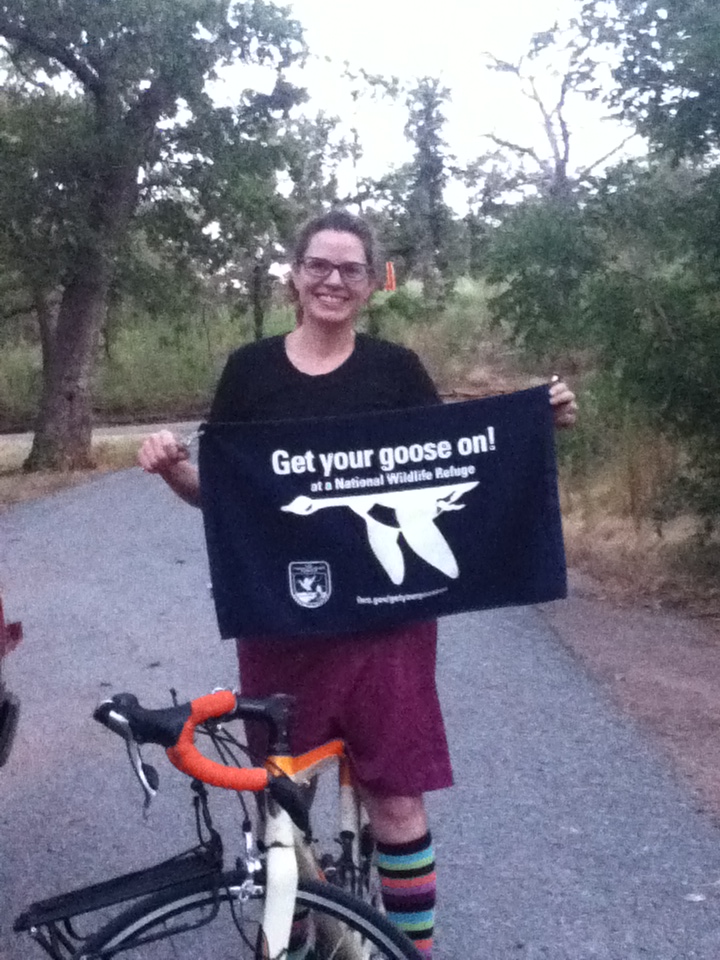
Get Your Goose On!

Wichita Mountains National Wildlife Refuge in Oklahoma.